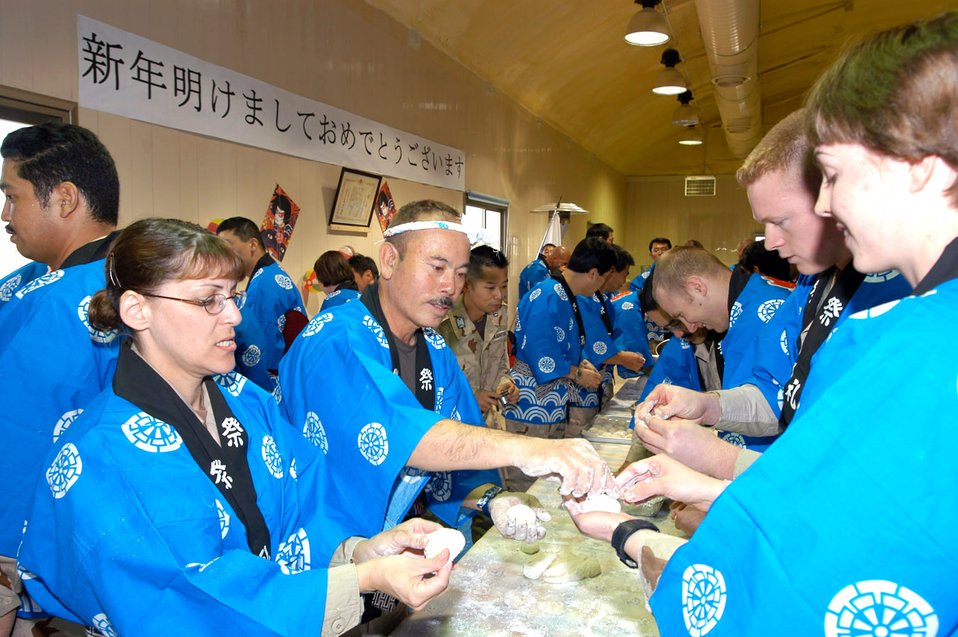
Mochi mashing

SOUTHWEST ASIA -- A Japanese airman (second from left) shows American Airmen how to mold Japanese sticky rice into mochi, a Japanese rice cake traditionally made and eaten during New Year's festivities. American and Japanese airmen work together at a forward-deployed location here.